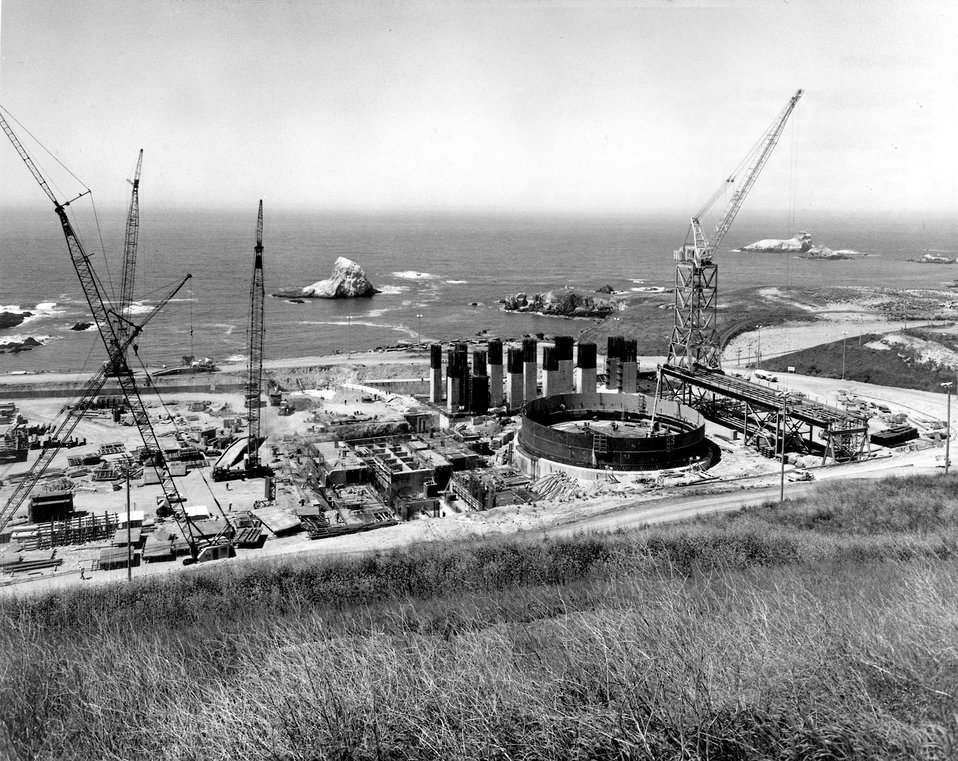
Construction at Diablo Canyon: The circular structure rising in the center of the photograph is the reactor containment. Circa 1970.